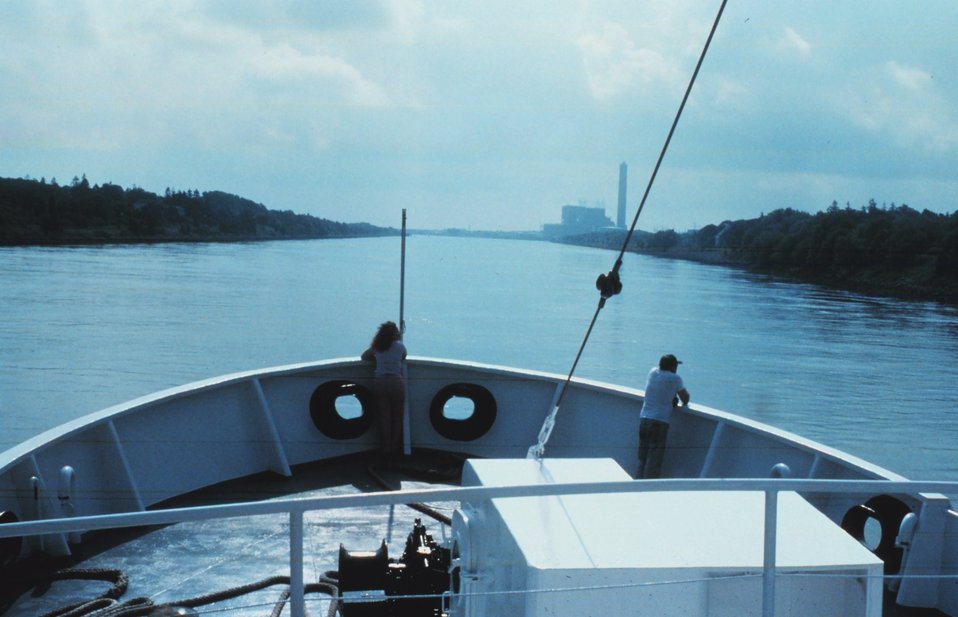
ALBATROSS IV transiting the Cape Cod Ship Canal.